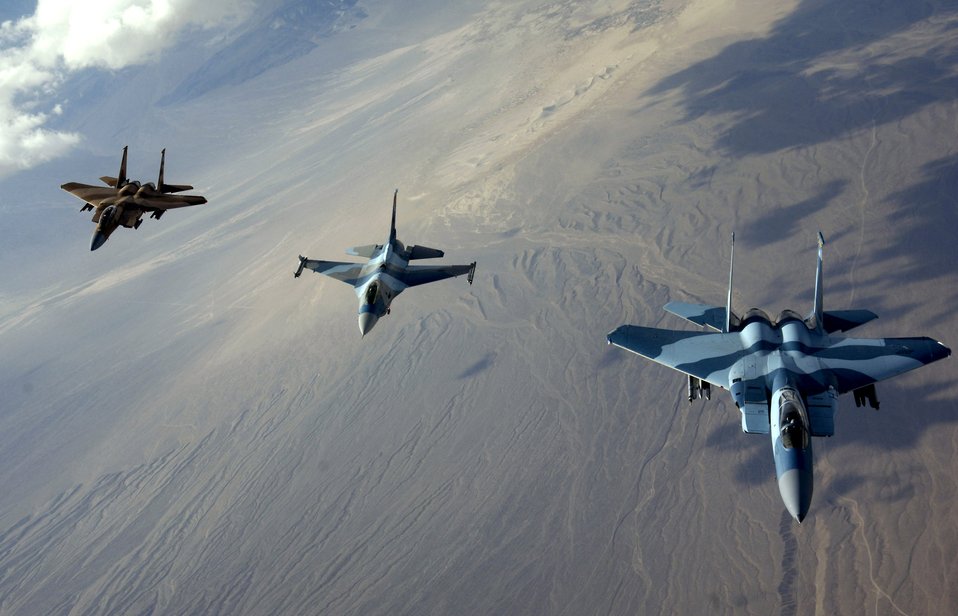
Revving up for Red Flag

The 64th Aggressor Squadron's F-15 Eagles and F-16 Fighting Falcon head to the fight after refueling Aug. 28 during Red Flag 07-3 exercise at Nellis Air Force Base, Nev. Red Flag tests aircrew war-fighting skills in realistic combat situations. The aircraft fly missions during the day and night to the nearby Nevada Test and Training Range to simulate an air war. Servicemembers from all the U.S. military branches, along with coalition forces, are participating in the event.